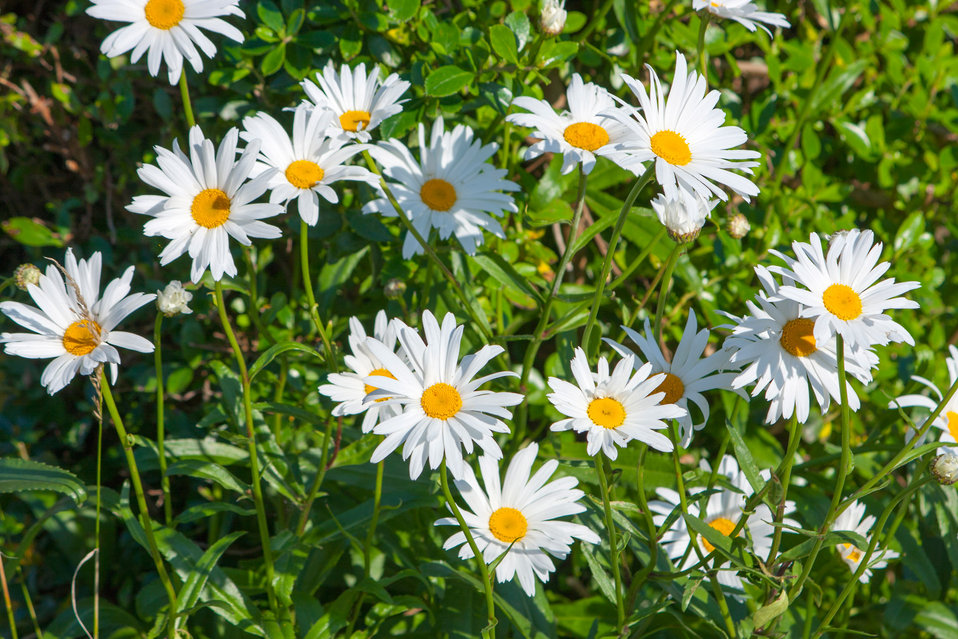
Daisy flowers

Beautiful background of white daisies, flowers image.